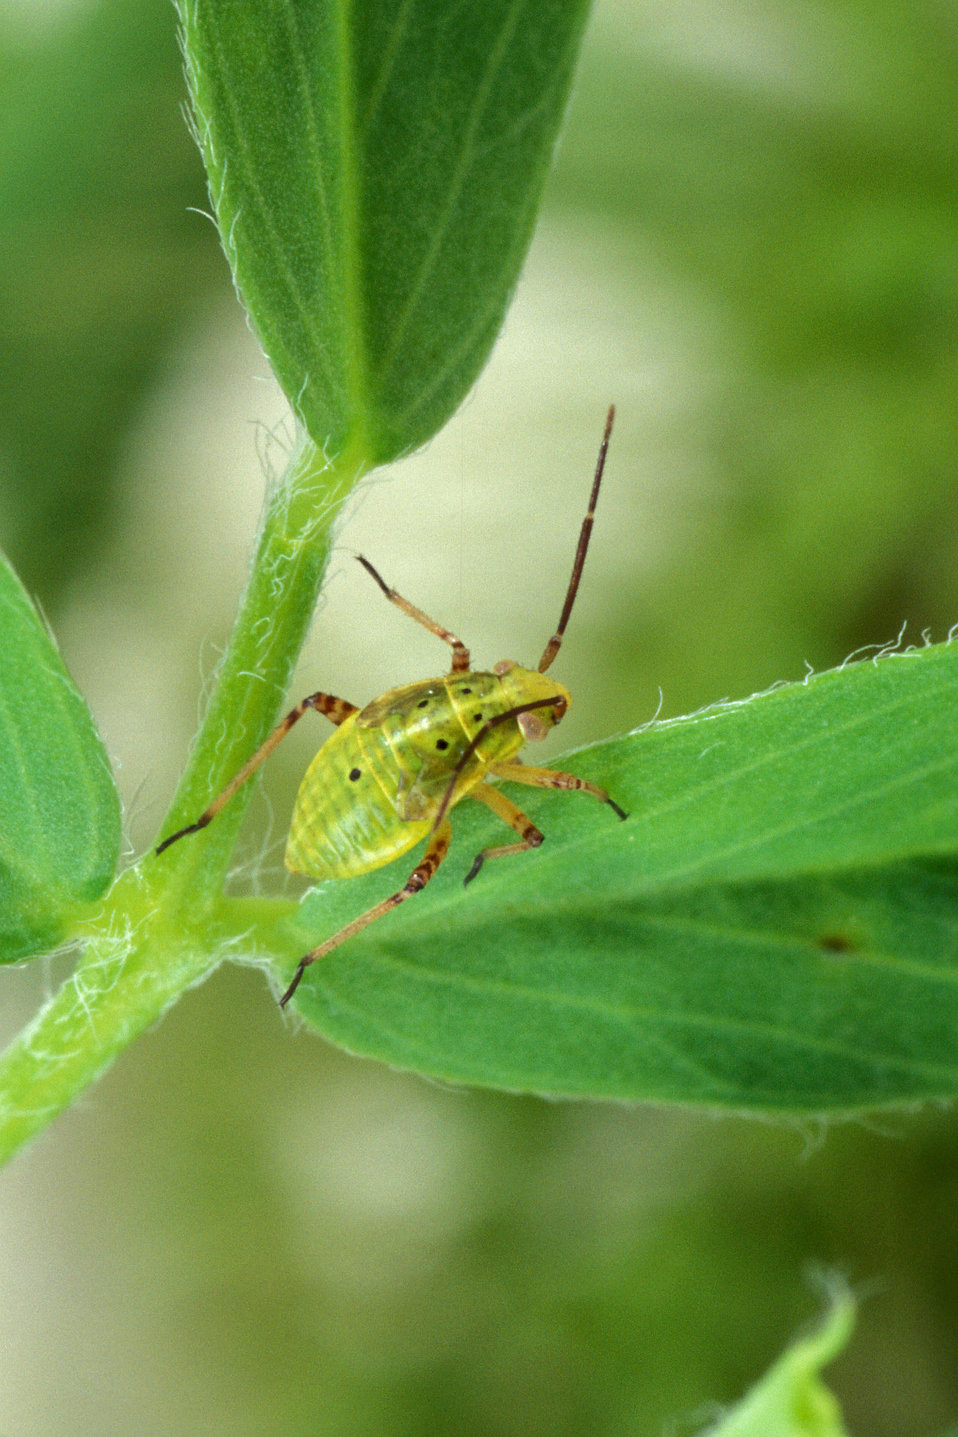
The tarnished plant bug (Lygus lineolaris) is a serious pest of alfalfa being grown for seed.